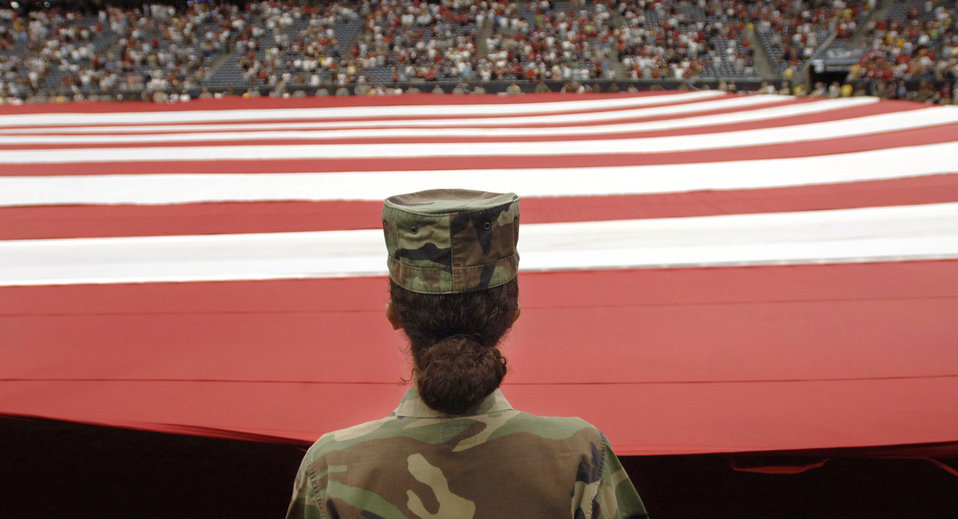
Grand ol' flag

An Airman is one of 200 servicemembers who pulled out a football-field-sized flag during the National Football League pre-game event at Reliant Stadium in Houston, Texas.